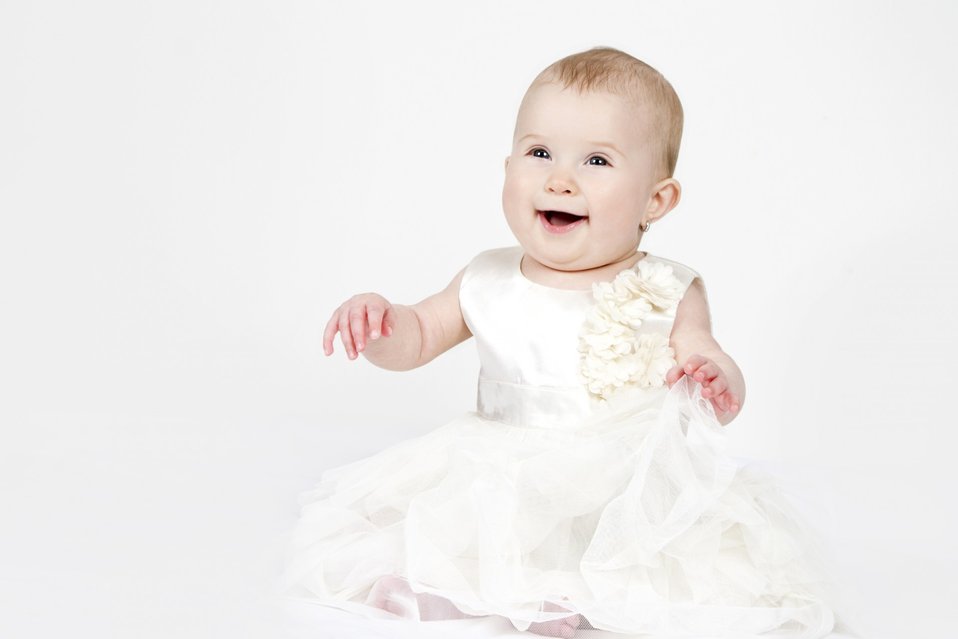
Little bridesmaid.